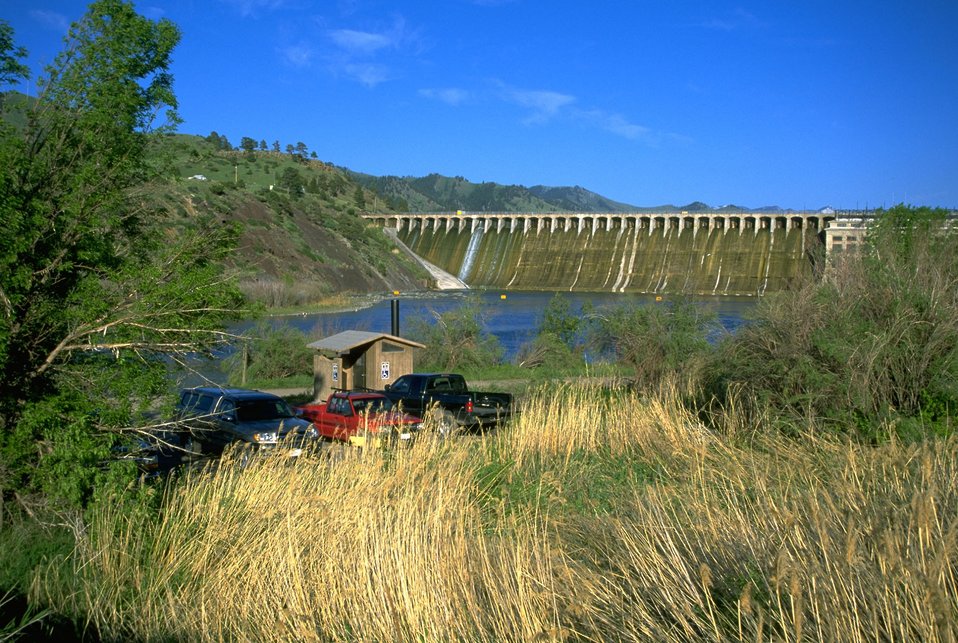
Holter Dam on the Missouri River